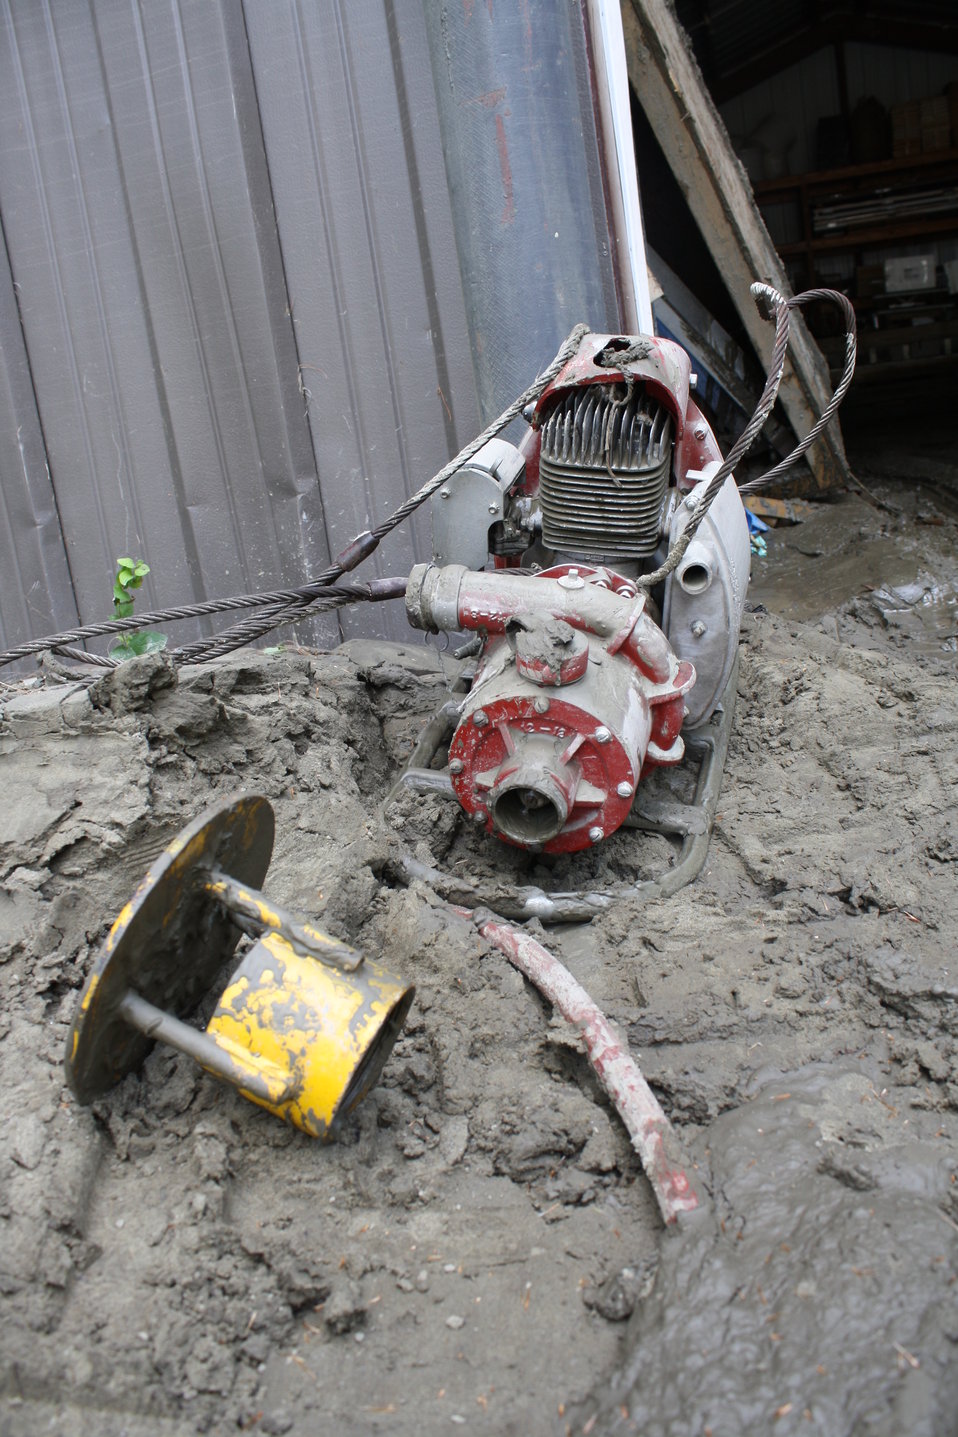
Equipment and facilities were damaged

Equipment and facilities at White River National Fish Hatchery were damaged by high flood waters and deposition of a significant amount of river sediment.